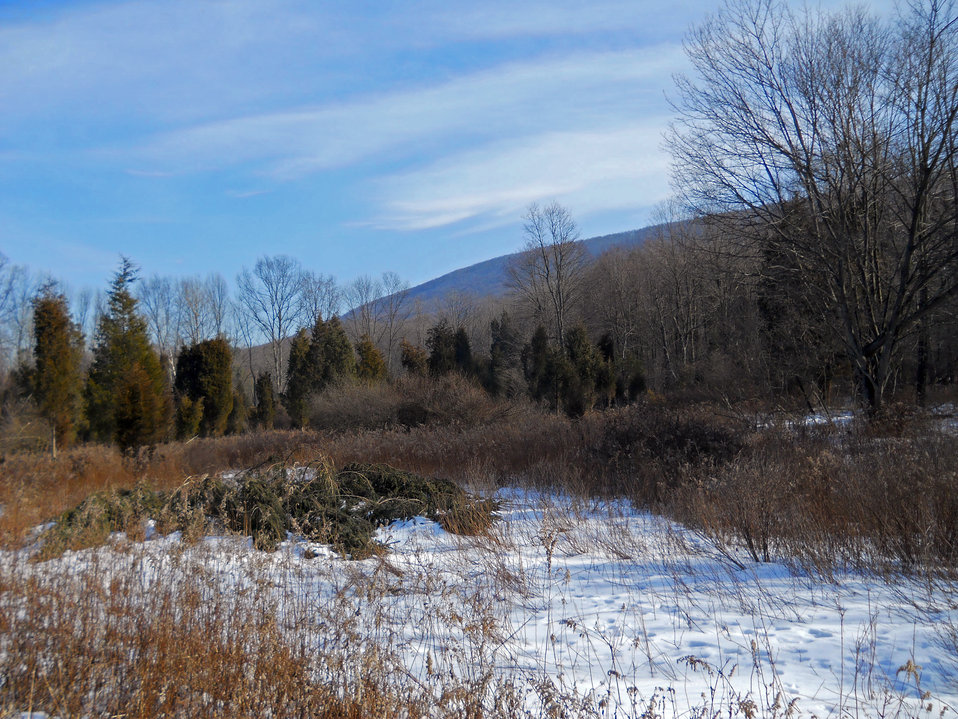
Winter at Cherry Valley National Wildlife Refuge in Pennsylvania.